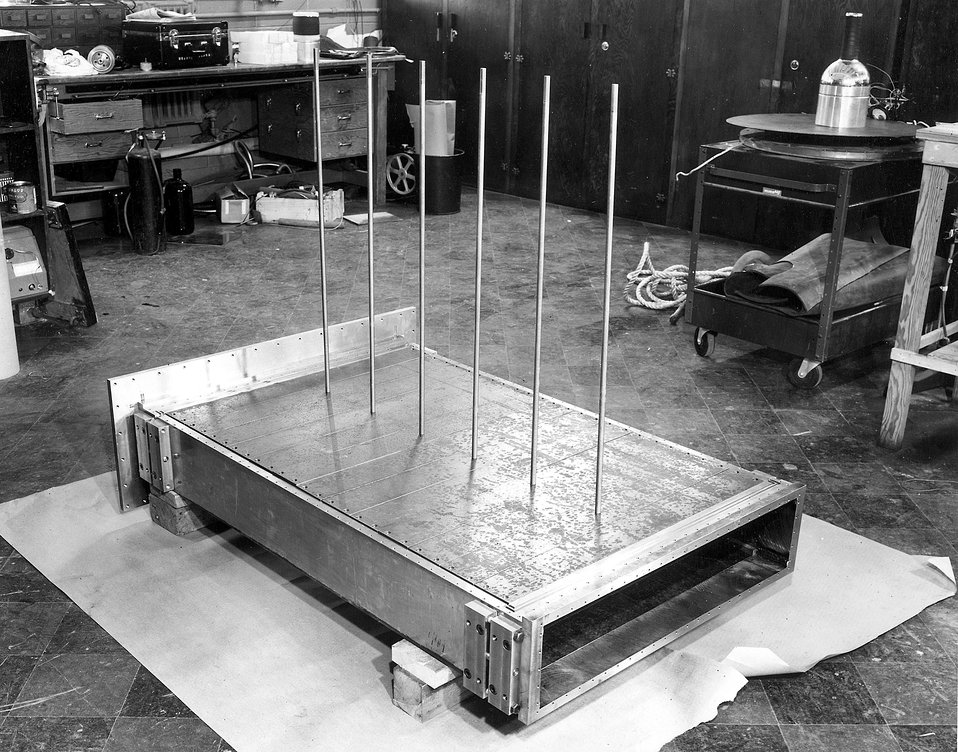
A section of a developmental model of vacuum chamber using 'sky hooks'. This technique was abandoned. c. 1950